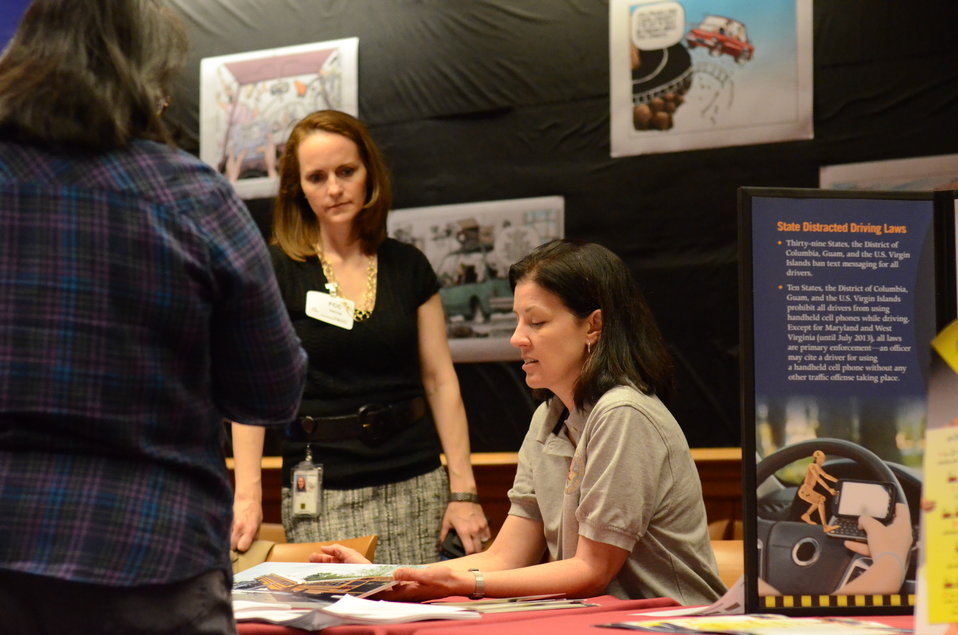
Distracted Driving Technology Showcase April 19, 2013